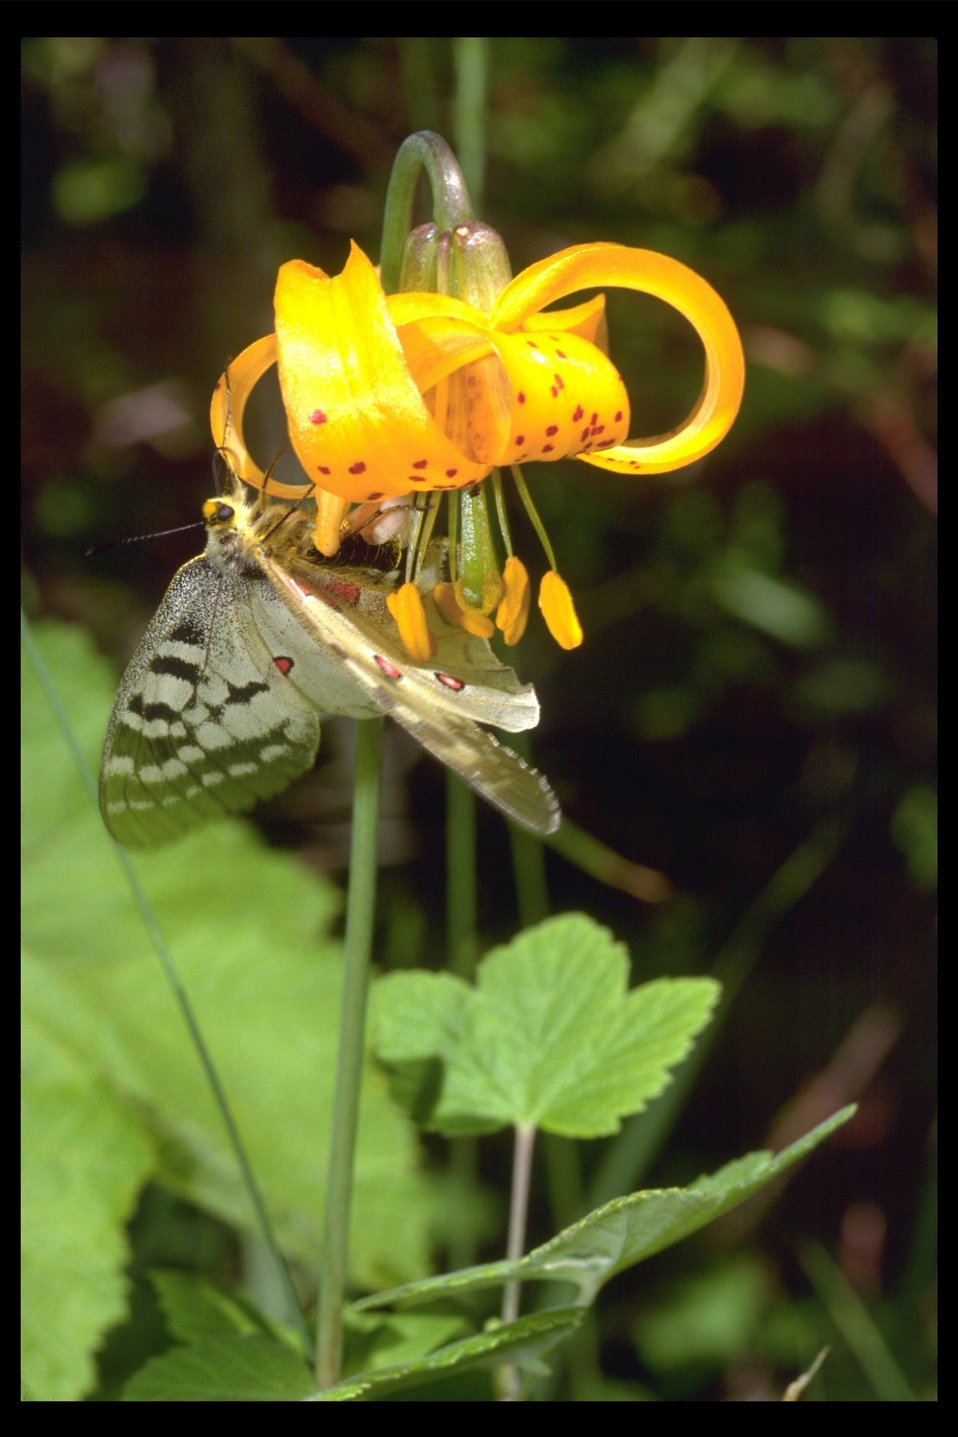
Butterfly on Tiger Lily along Upper Trail Creek.